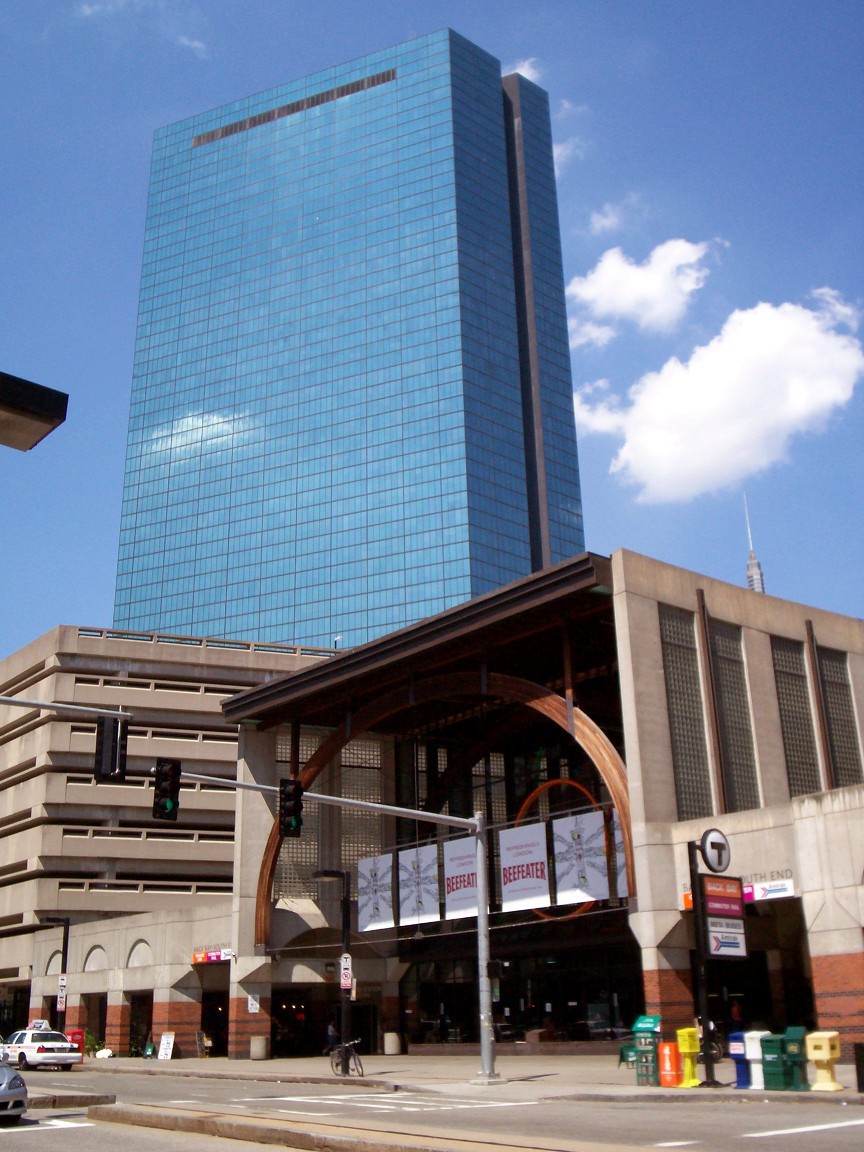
The main facade and entrance to Back Bay Station, served by Amtrak, MBTA Commuter Rail, and the MBTA Orange Line. The John Hancock Tower is in the background. This view is approximately northeast, from the west sidewalk of Dartmouth Street.